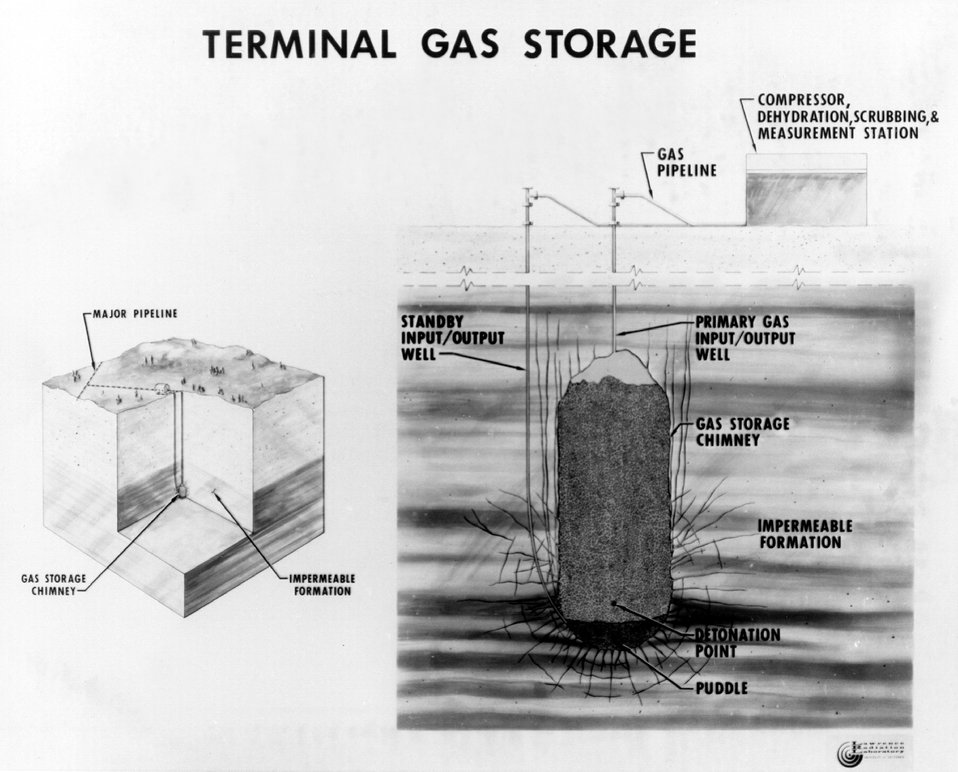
In recent years, the natural gas industry has used underground caverns and depleted natural gas wells to supplement conventional above ground facilities to store natural gas near consumers in order to meet peak demands. Circa 1967.